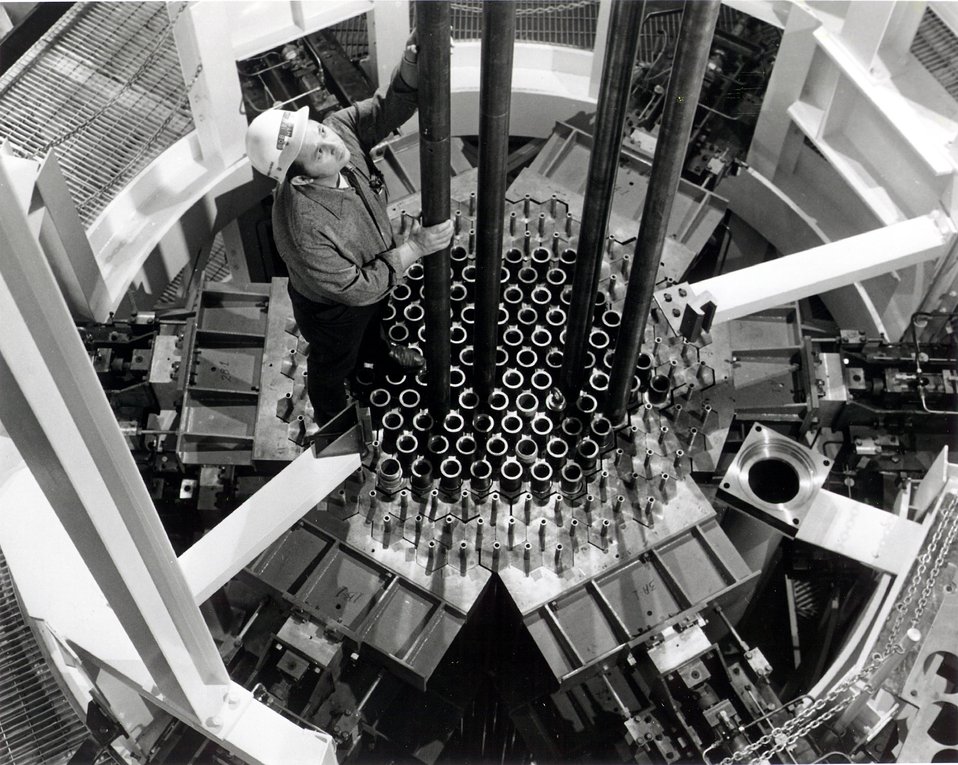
Mockup of the core of the Fast Flux Test Facility which will provide data for the Liquid Metal Fast Breeder Reactor. c. 1973.